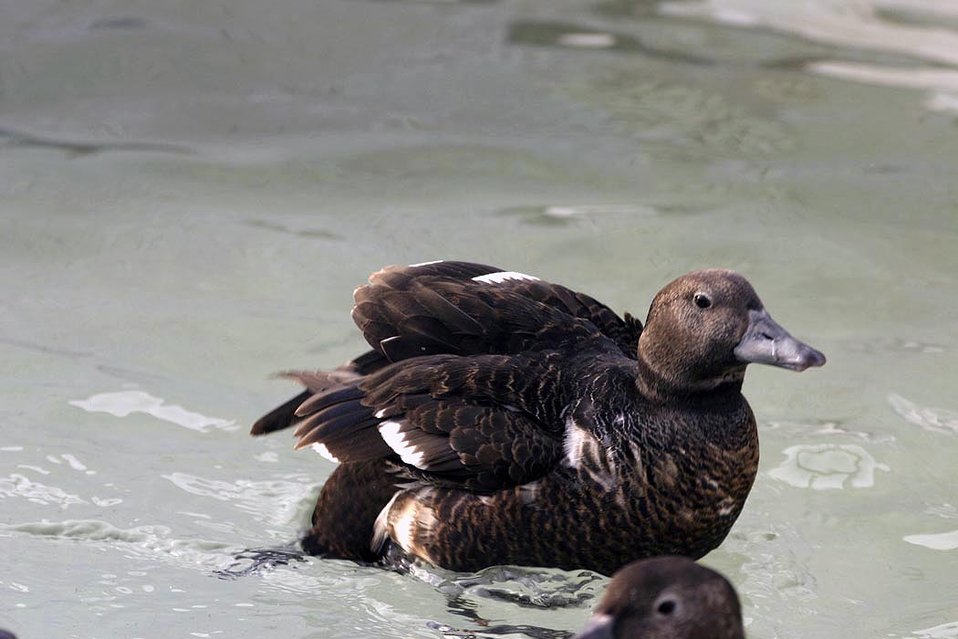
Threatened Steller's eider (Polysticta stelleri) female, Alaska SeaLife Center, Seward, Alaska